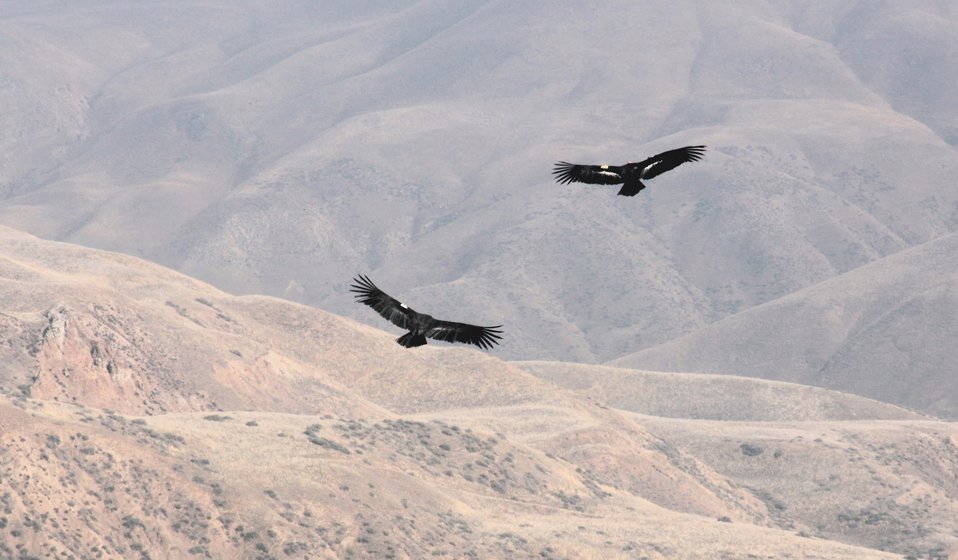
A pair of condors in Flight

A pair of Condors soar above Bitter Creek National Wildlife Refuge near Maricopa, Califonia. Condors usually mate for life, raising one chick for a year before laying and hatching another egg.